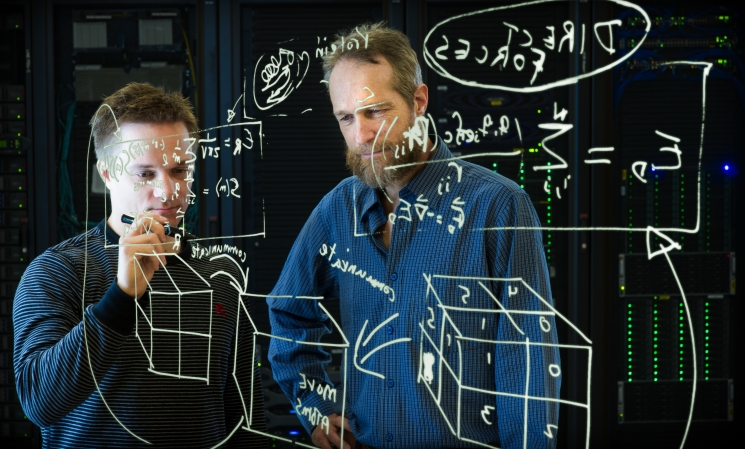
The Energy Systems Integration Facility

This week, the National Renewable Energy Laboratory (NREL) opened the Energy Systems Integration Facility, a new research center in Golden, Colorado, that will help boost the integration of clean energy technologies into the electricity grid. In the photo, NREL scientists Michael Crowley and Antti-Pekka Hynninen display some of the formulas they developed to speed calculations done by the software tool CHARMM by several orders of magnitude. Using NREL's new petascale supercomputer housed in the Energy Systems Integration Facility, they can simulate the motions of thousands of atoms, leading to greater understanding of how molecular models work. | Photo by Dennis Schroeder, NREL.

1.usa.gov/16mc5RX — in Golden, CO.